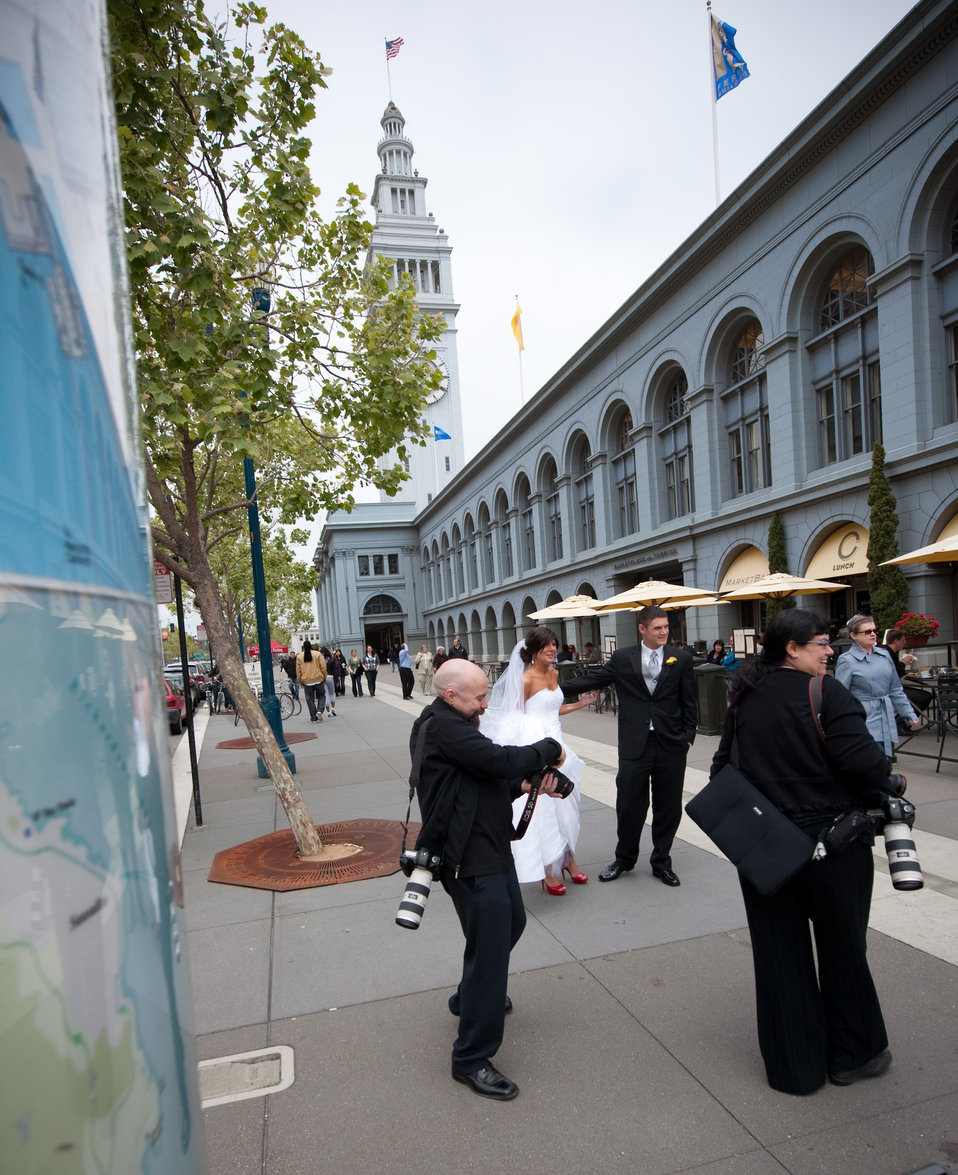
San Francisco Dream Wedding

Vanessa Muza Teskey (in wedding dress) and Capt. Mike Hawkins (to her right) walk along the Port of San Francisco Ferry Terminal May 14, 2010. The wedding couple won the San Francisco Dream Wedding Giveaway. Mrs. Hawkins has been diagnosed with stage IV Hodgkin's lymphoma. Vendors donated $100,000 of goods and services to the couple's wedding day.